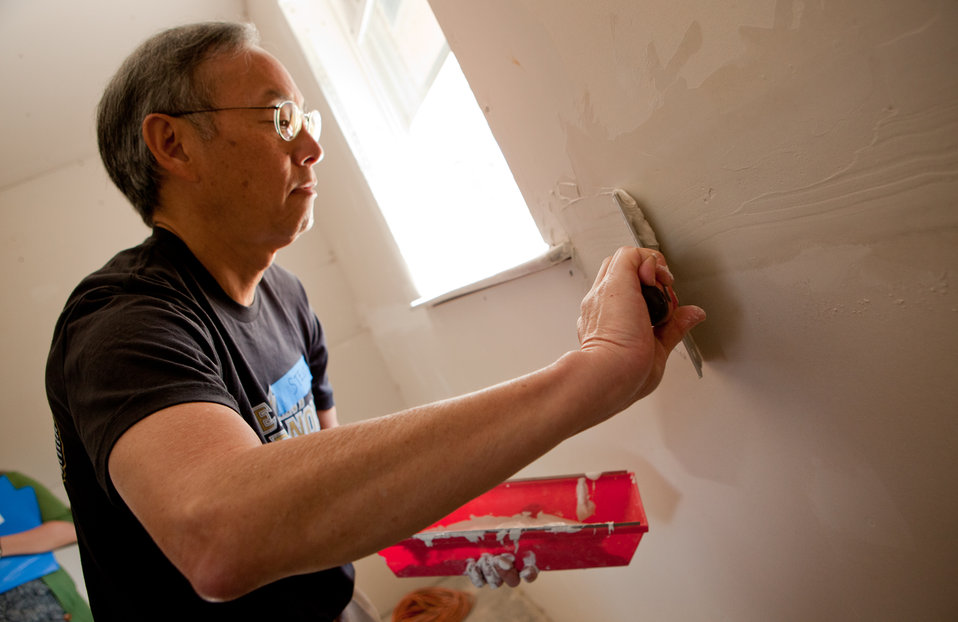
Veteran's Day in New Orleans 4 of 10

Sec. Chu mudding walls.